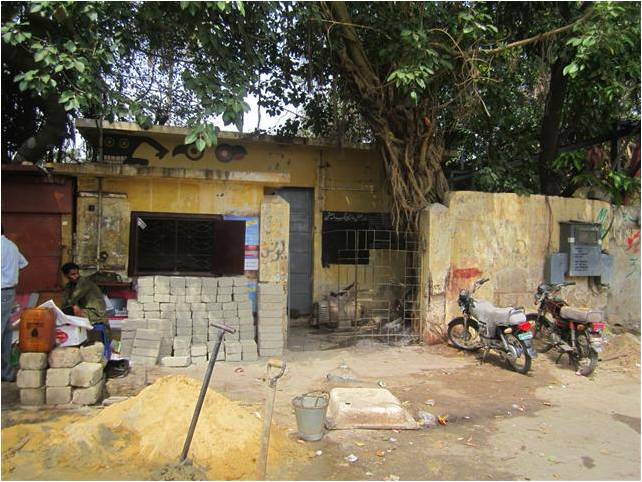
View of the pump before the renovation